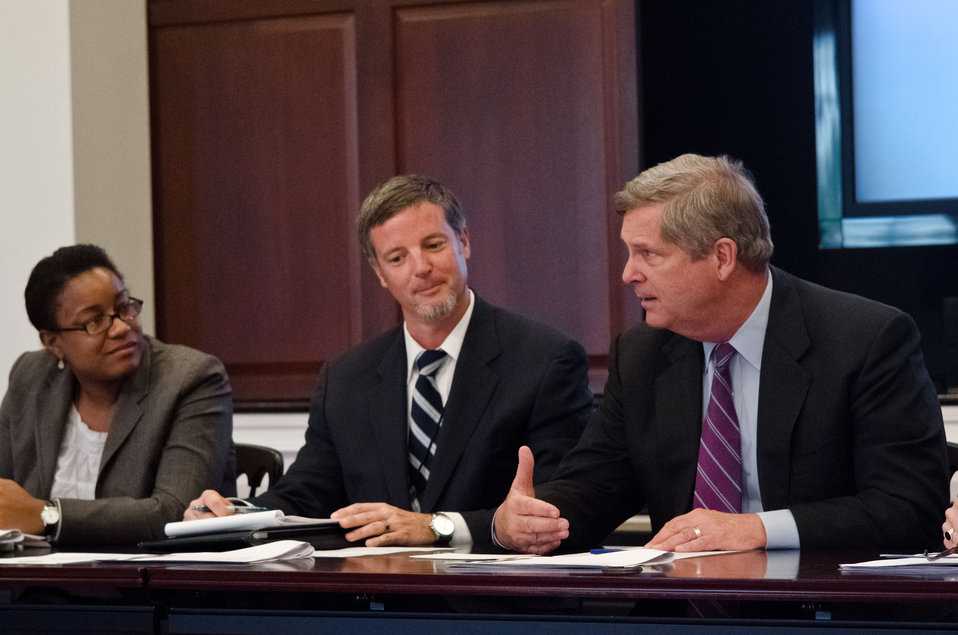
Agriculture Secretary Tom Vilsack (right), chairs a meeting of the White House Rural Council at the White House in Washington, D.C. on Friday, Oct. 5, 2012. White House Domestic Policy Council Senior Policy Advisor for Rural Affairs Doug McKalip (center) moderated the event and White House Deputy Assistant to the President for Economic Policy Danielle Gray (left) spoke with the White House Rural Council as they discuss recent White House announcements and Secretary Vilsack asked council members to outline their work plan for the coming months.